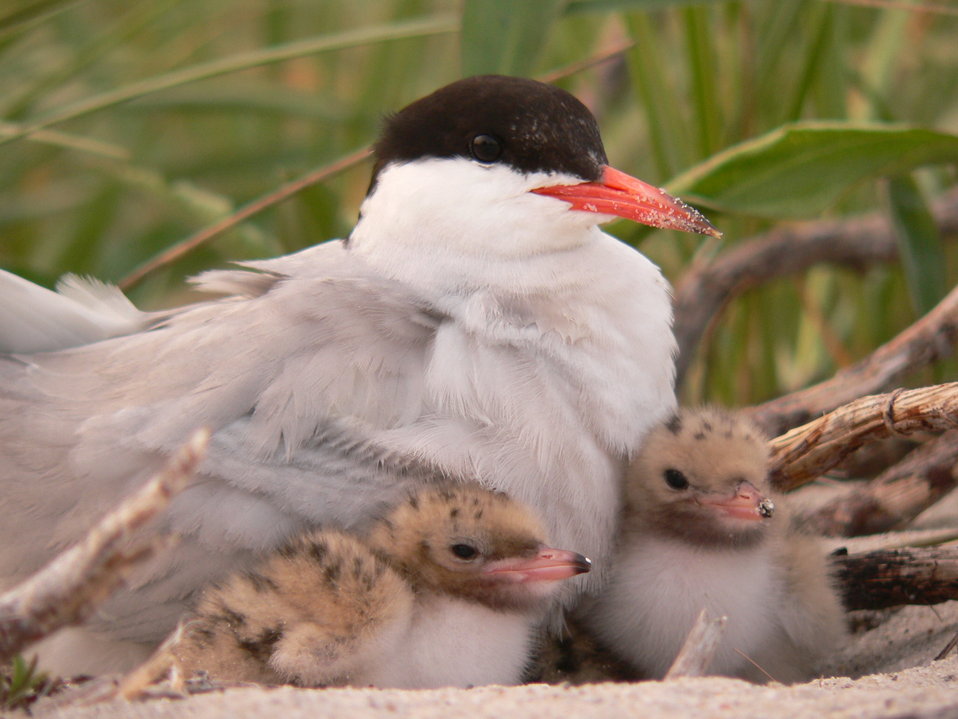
Common tern and chicks

Monomoy National Wildlife Refuge.